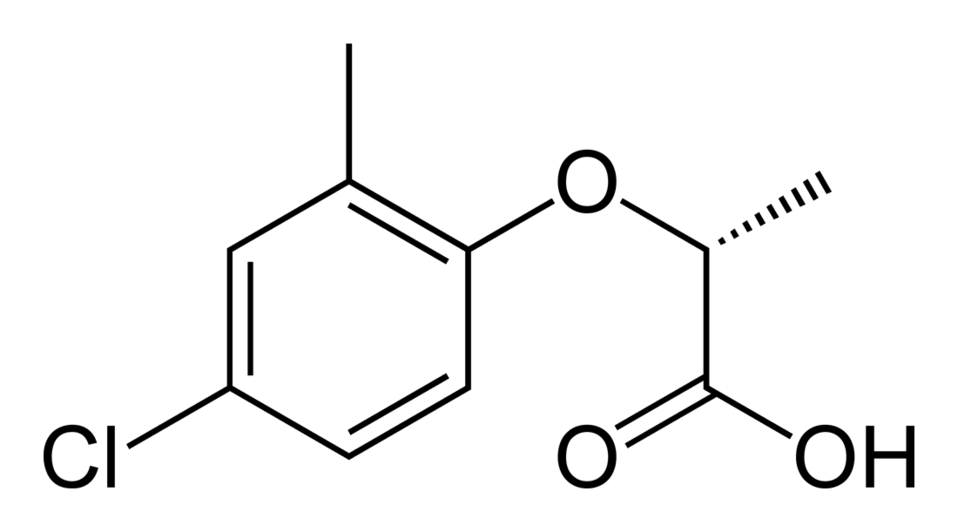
Skeletal formula of the (R) enantiomer of mecoprop, C10H11CIO3.